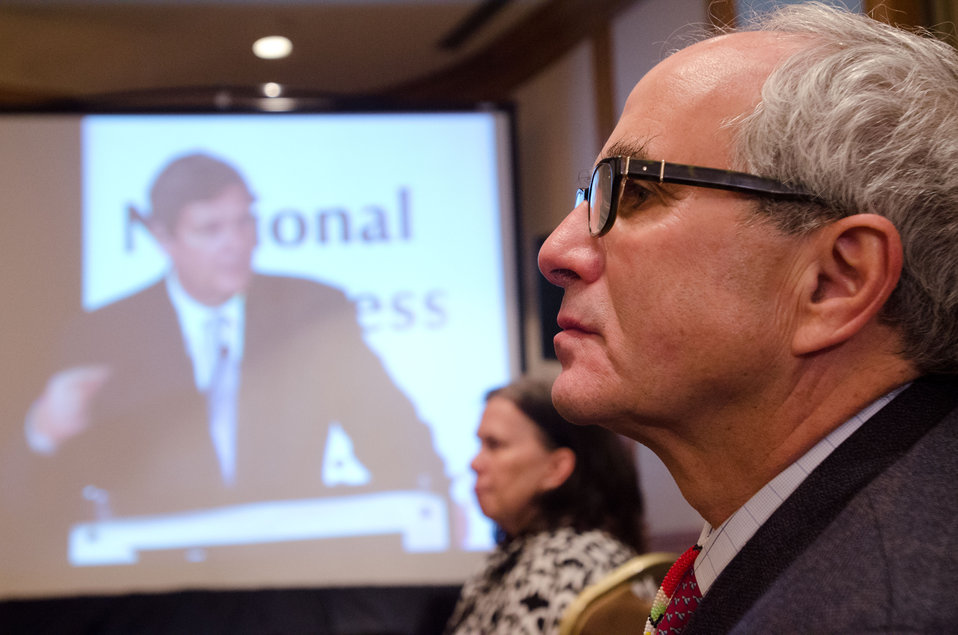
Kul Wicasa Oyate Lower Brule Sioux Tribe Ambassador to the United States Marshall Matz (right) listens to Agriculture Secretary Tom Vilsack (on screen) speaking at the National Congress of American Indians Tribal Nations Legislative Summit in Washington, D. C. on Wednesday March 7, 2012. Secretary Vilsack has made improving relations with Native American Tribes a priority by creating the Office of Tribal Relations, led by his Senior Advisor Janie Hipp (center). This supports his directive to make USDA agencies more aware of tribal issues and engage in Tribal consultation and collaboration. Secretary Vilsack reiterated USDA’s support to native communities with financial support for electric, broadband and wastewater infrastructure, and provides native families and businesses with home loans and business grants. Secretary Vilsack emphasized USDA’s participation in the First Lady’s Lets Move in Indian Country initiative to combat childhood obesity in tribal communities.